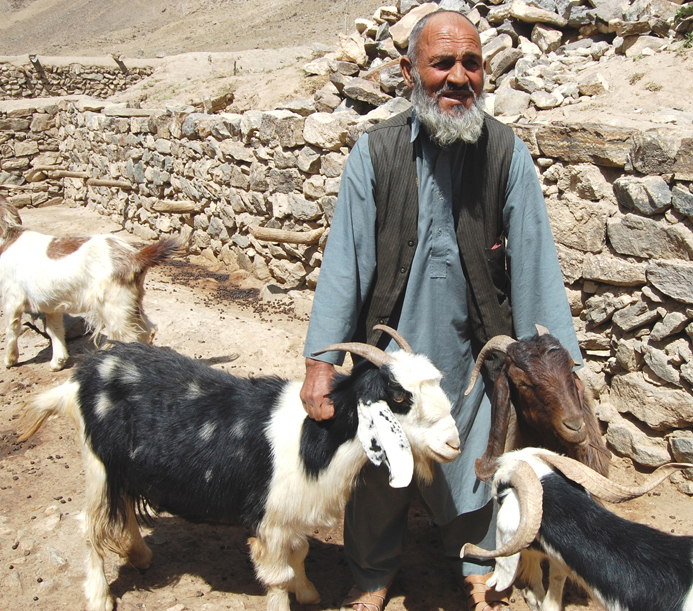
Khodaar